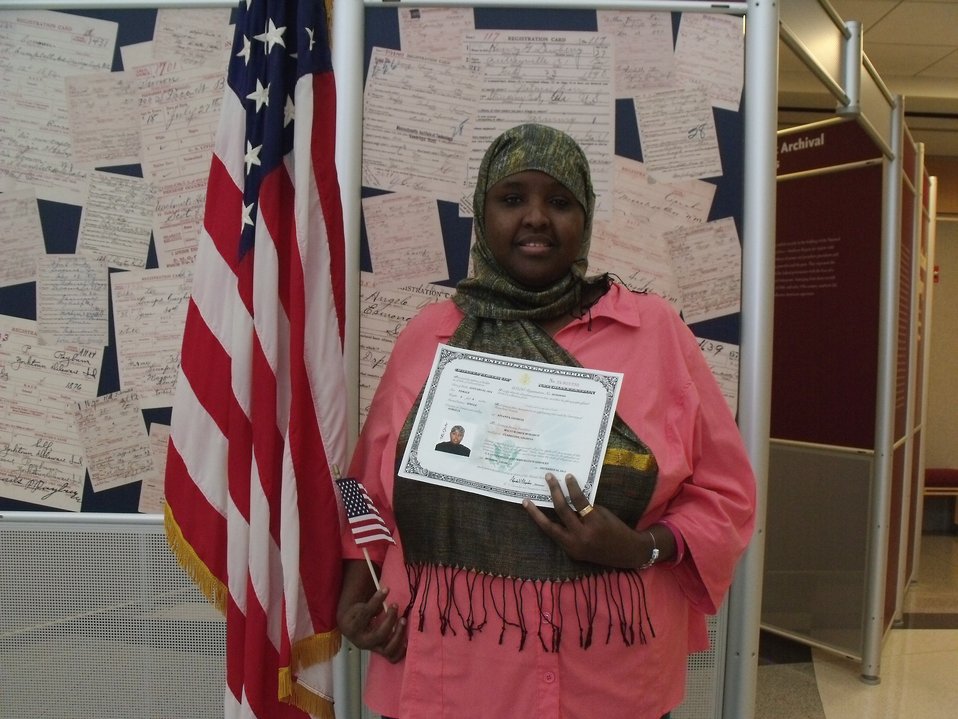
New Citizens